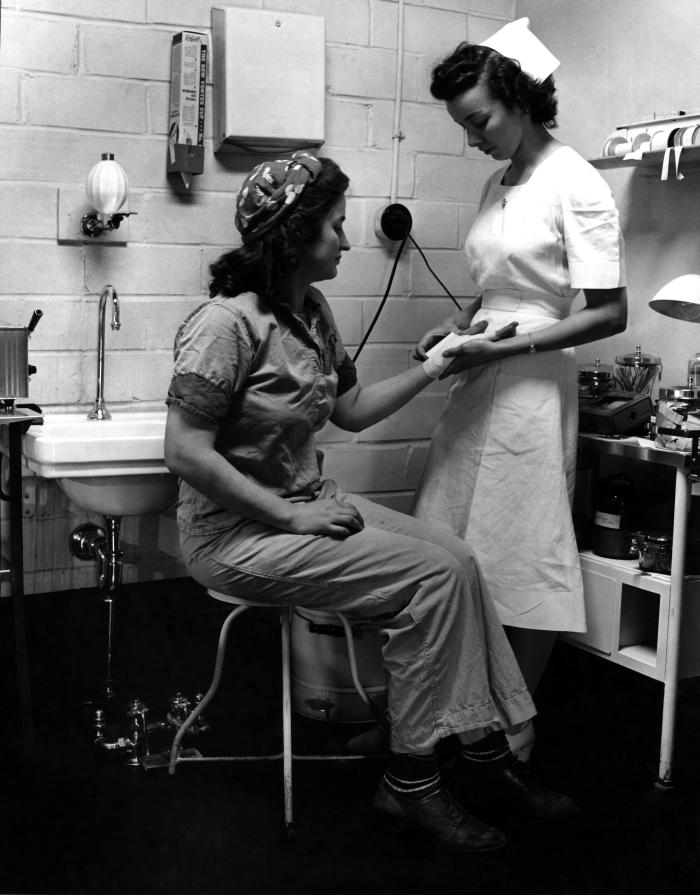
This historical 1943 image, provided by the Center for Disease Control's (CDC), National Institute for Occupational Safety and Health (NIOSH), depicted an inhouse nurse at an Ohio TNT military ordnance manufacturing plant in the process of bandaging the left hand of an injured fellow female employee. On the job injuries present an ever-present problem for any business, but especially in the manufacturing sector, and especially in a facility where the handling of toxic substances such as trinitrotoluene is common. A poisonous chemical, TNT will irritate the skin upon contact, and actually will change the skin's color to a bright yellow-orange. Prolonged exposure leads to liver damage, anemia, enlargement of the spleen, and a compromised immune system, to name a few of its negative effects. Trinitrotoluene is also a known carcinogen.